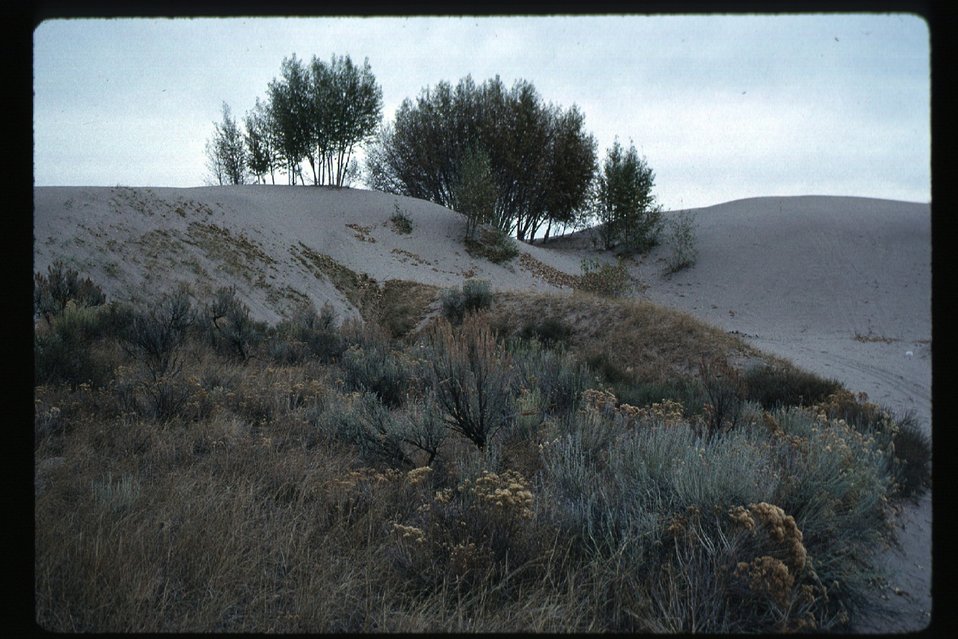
Recreation St Anthony Sand Dunes Idaho Falls Field Office USRD Upper Snake River District